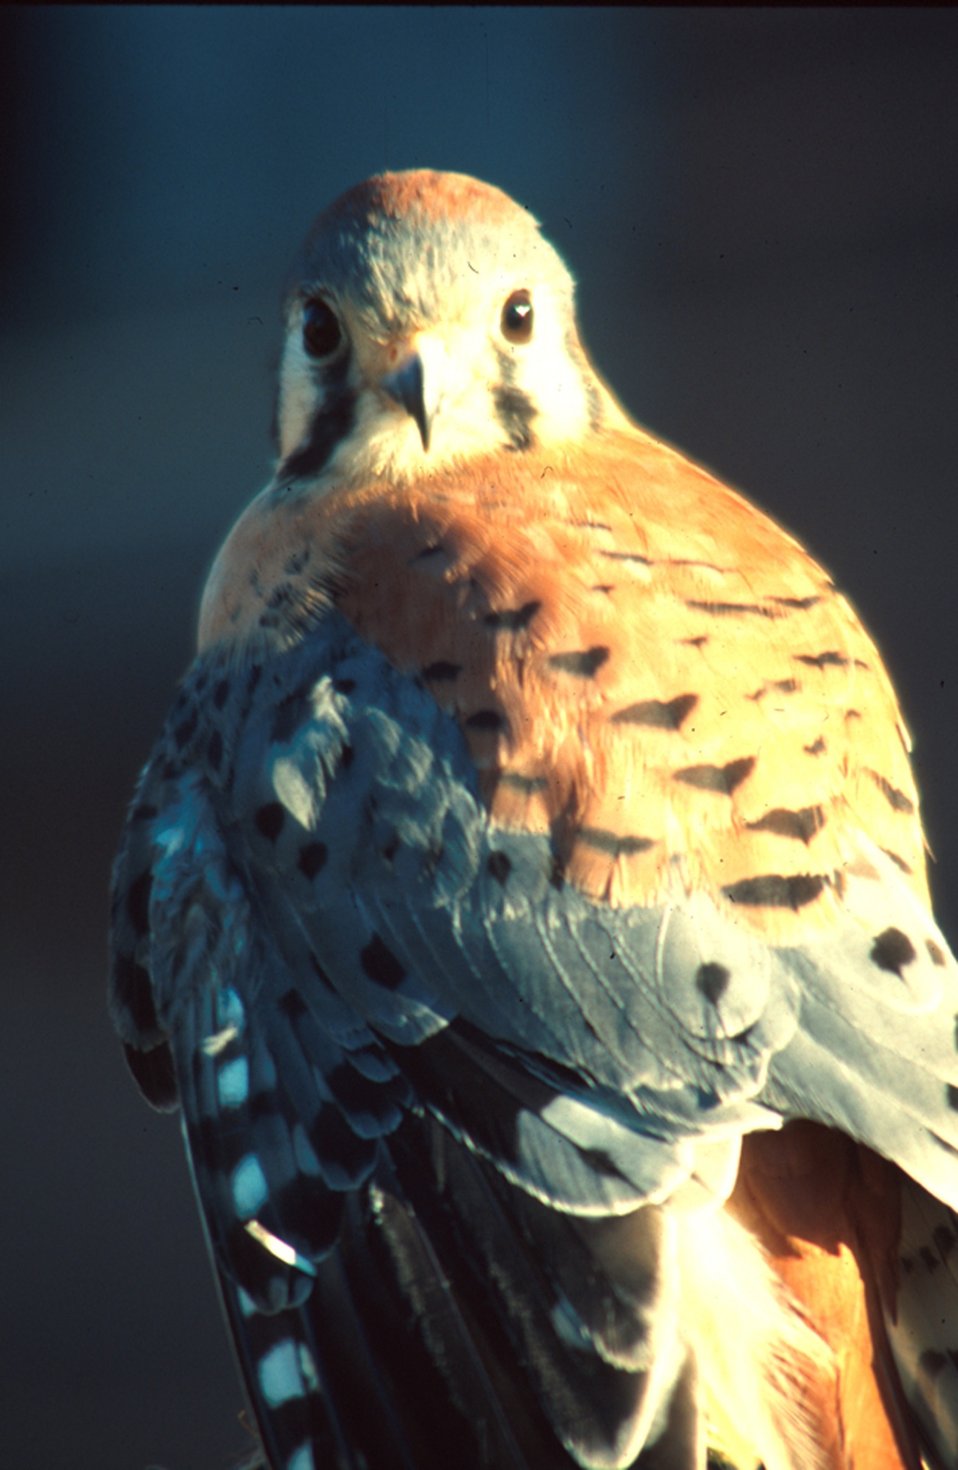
American Kestrel Owyhee Field Office LSRD Lower Snake River District